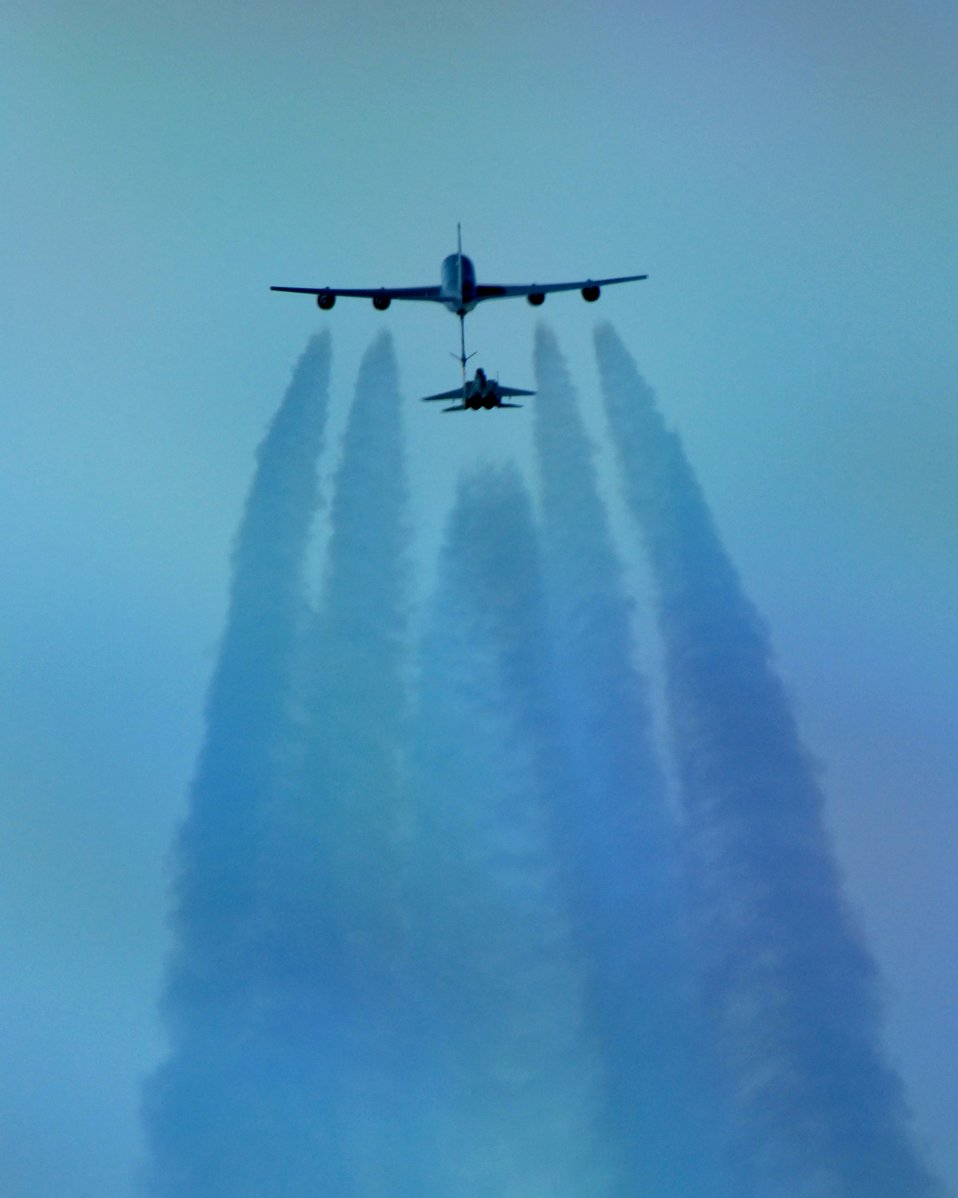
Gas at 20,000 feet

An F-15 Eagle from Elmendorf Air Force Base, Alaska, refuels behind a KC-135 Stratotanker March 26 over the Pacific Alaska Range Complex. The KC-135 is from Eielson AFB, Alaska. The tanker also provides aerial refueling support to Navy and Marine Corps aircraft as well as aircraft of allied nations.